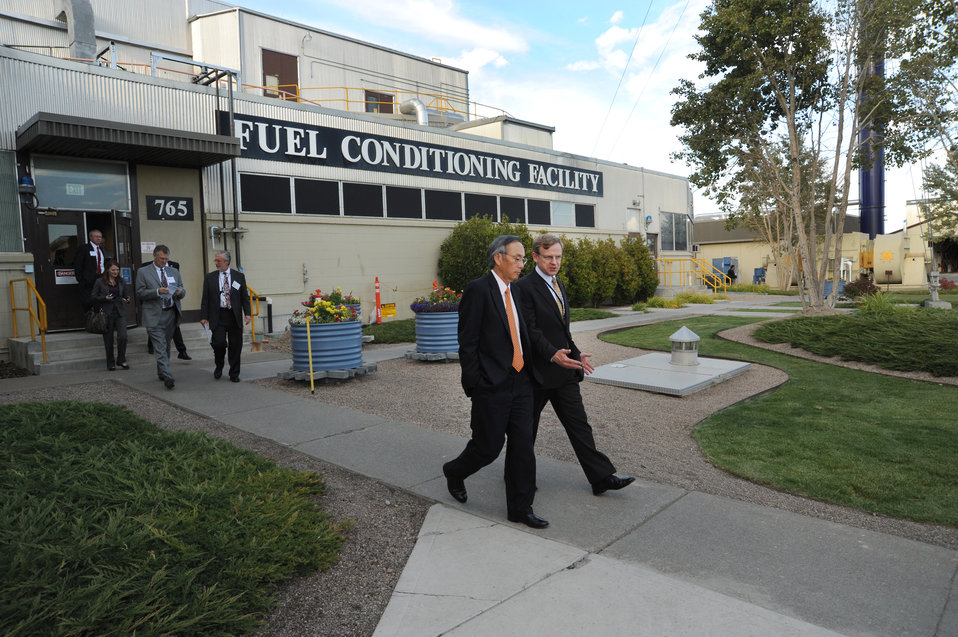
Energy Secretary Steven Chu and John Grossenbacher reflect on nuclear energy research at the Idaho National Laboratory as they leave the fuel conditioning facility at Materials and Fuels Complex.
INL's Materials and Fuels Complex is located 38 miles west of Idaho Falls on the High Desert Sagebrush Steppe of the Snake River Plain in Southern Idaho. The complex is the prime testing center for advanced technologies associate with nuclear power systems. It contributes increasingly efficient reactor fuels and the important work of nonproliferation harnessing more energy with less risk.